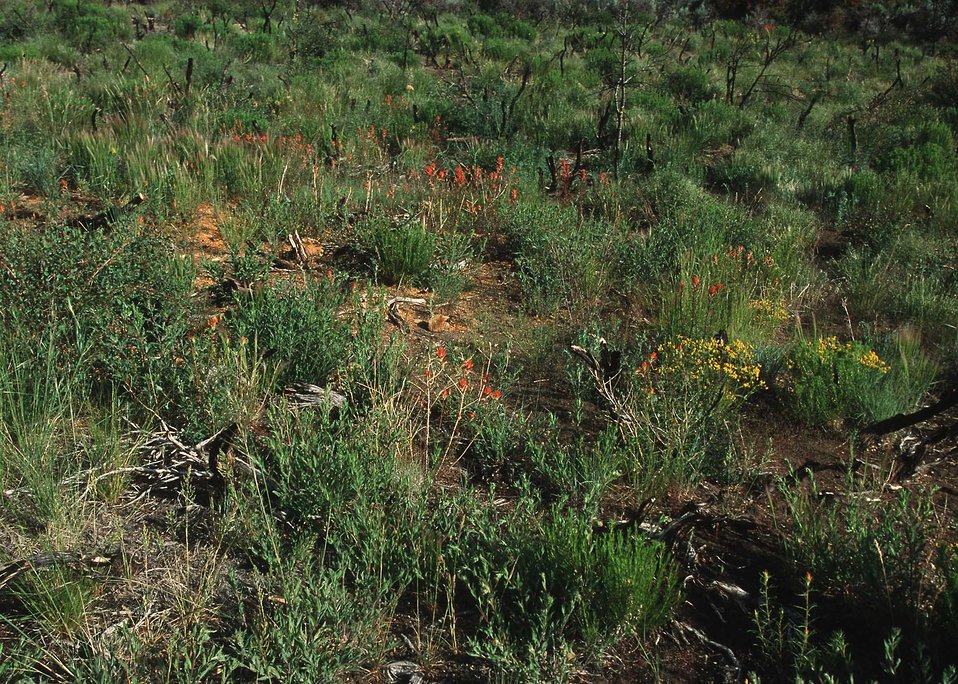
Post-Prescribed Burn vegetation regeneration.